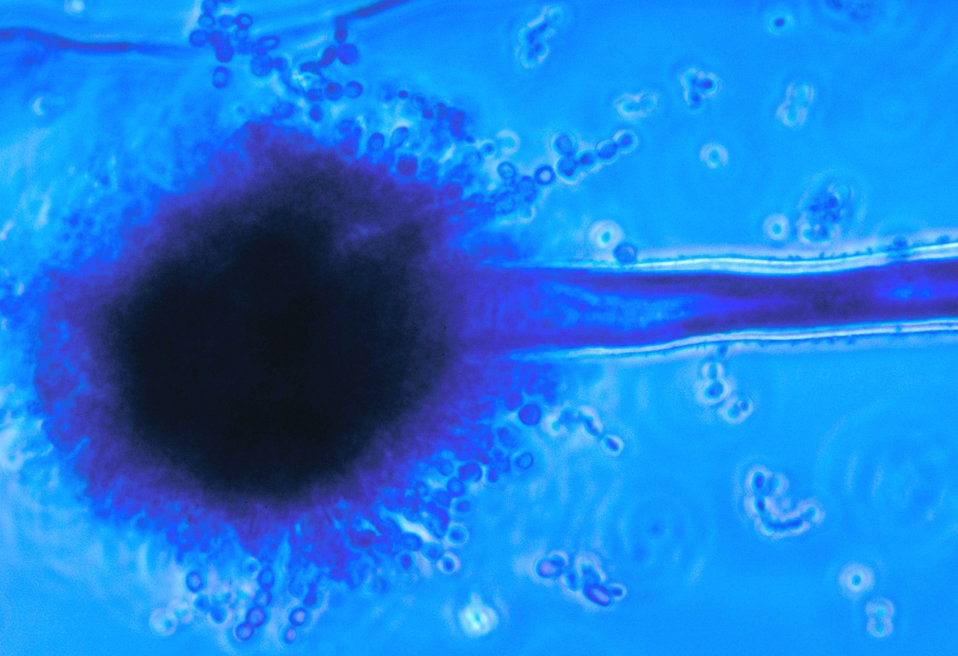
This photomicrograph depicts the appearance of a conidiophore of the fungus Aspergillus flavus.